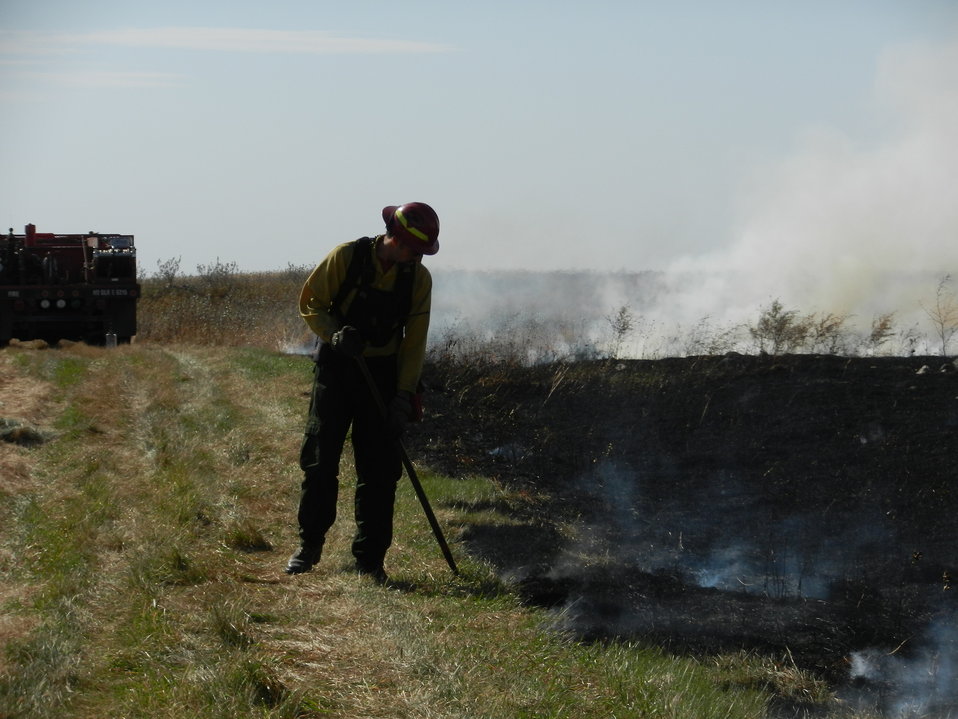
Fall Prescribed Burning on Des Lacs Refuge

The FWS fire management program includes hazardous fuels reduction, wildfire management, and wildfire prevention. This involves technical expertise in firefighting and prescribed burning, an understanding of fire ecology, and interaction with the public. Arguably one of the most physically arduous and dangerous natural resource professions, wildland fire management involves multiple objectives and dynamic strategies, depending upon conditions and resource objectives outlined in the fire management plan for a specific unit.